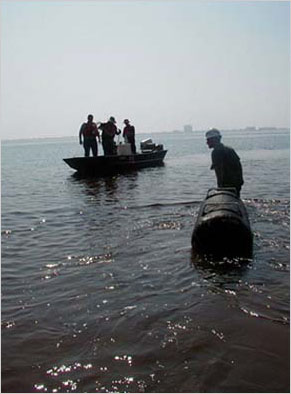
Ivan cleanup

Superfund workers collect Hurricane Ivan's hazardous leftovers on the Gulf Coast.